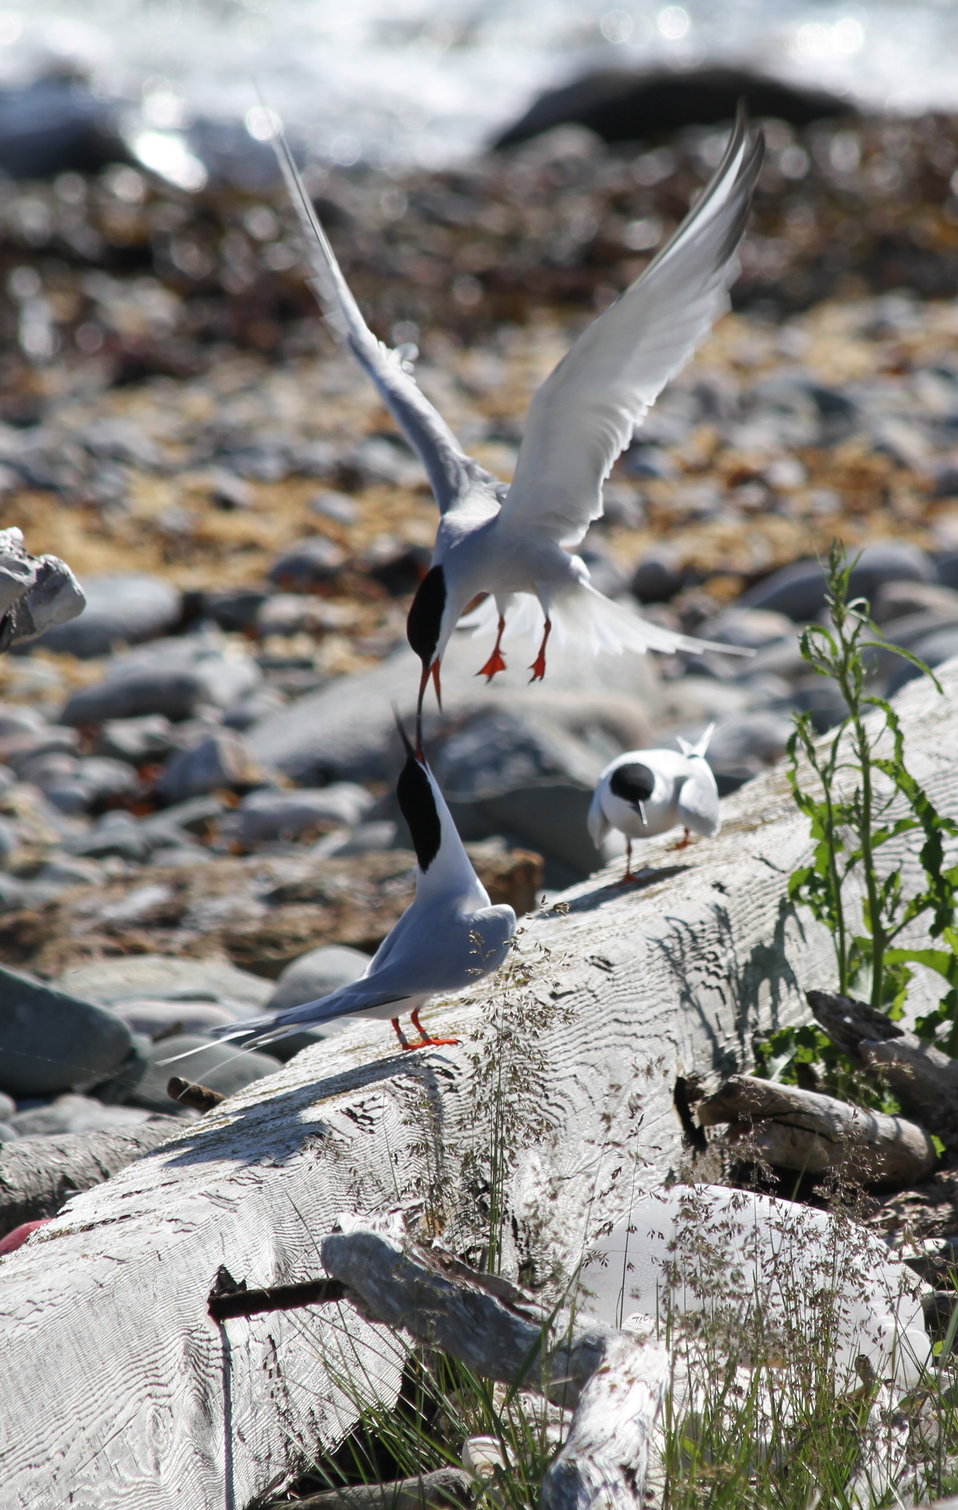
Roseate Terns Being Harrassed By Common Tern Neighbors

Metinic Island, Maine Coastal Islands NWR. Summer with the Seabirds blog: mainecoastalislands.wordpress.com/2010/07/23/metinic-isla...